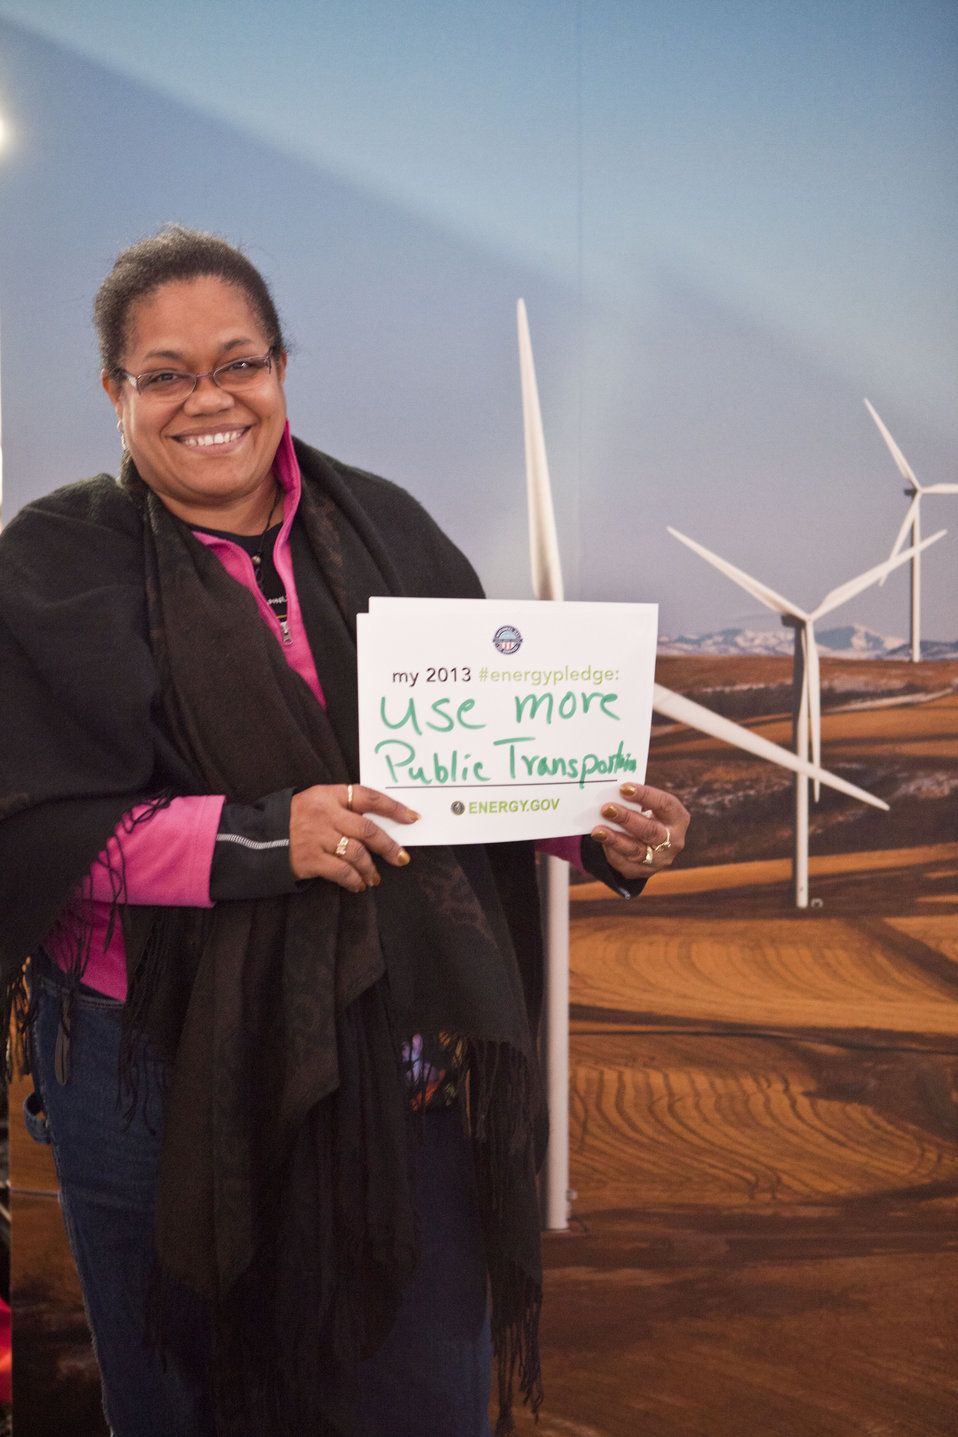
What's your #energypledge?